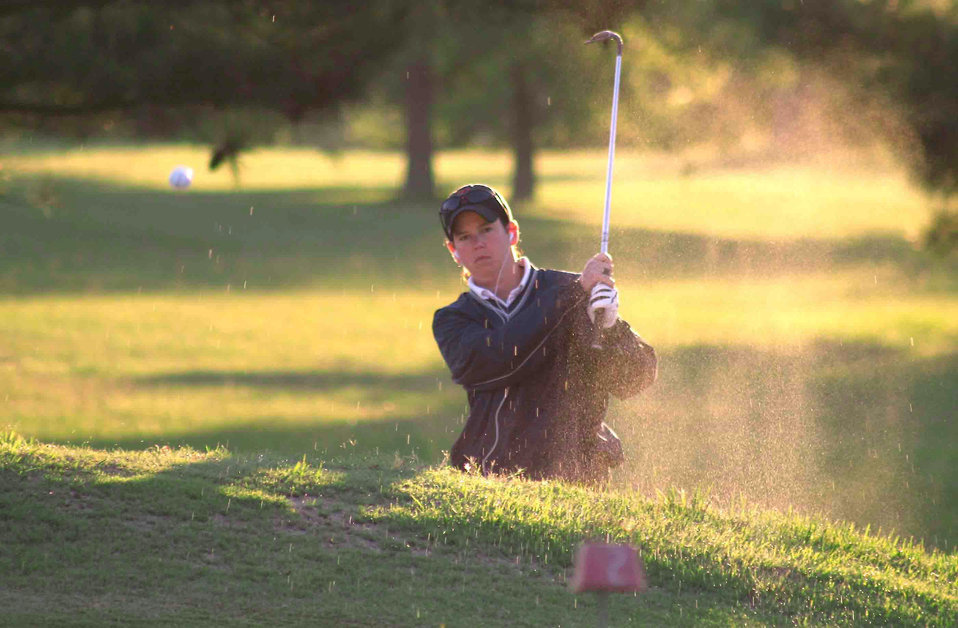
Airmen tee off to represent Air Force

Capt. Linda Jeffery hits her golf ball out of the sand bunker during practice play in preparation for the All Air Force Training Camp/Championship Sept. 15 at Shaw Air Force Base, S.C. The top six male and top three female players from the tournament will represent the Air Force in the Armed Forces Golf Championship. Captain Jeffrey, from Offutt AFB, Neb., took first place for the woman's category.